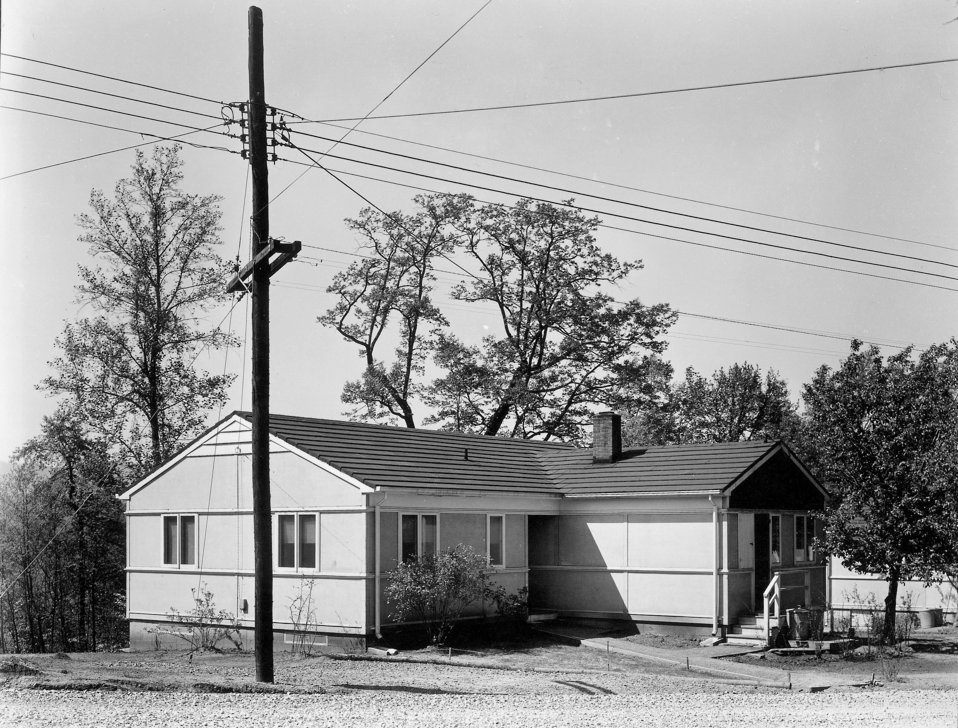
C House Oak Ridge

DOE photo by Ed Westcott Oak Ridge Tennessee

1940s